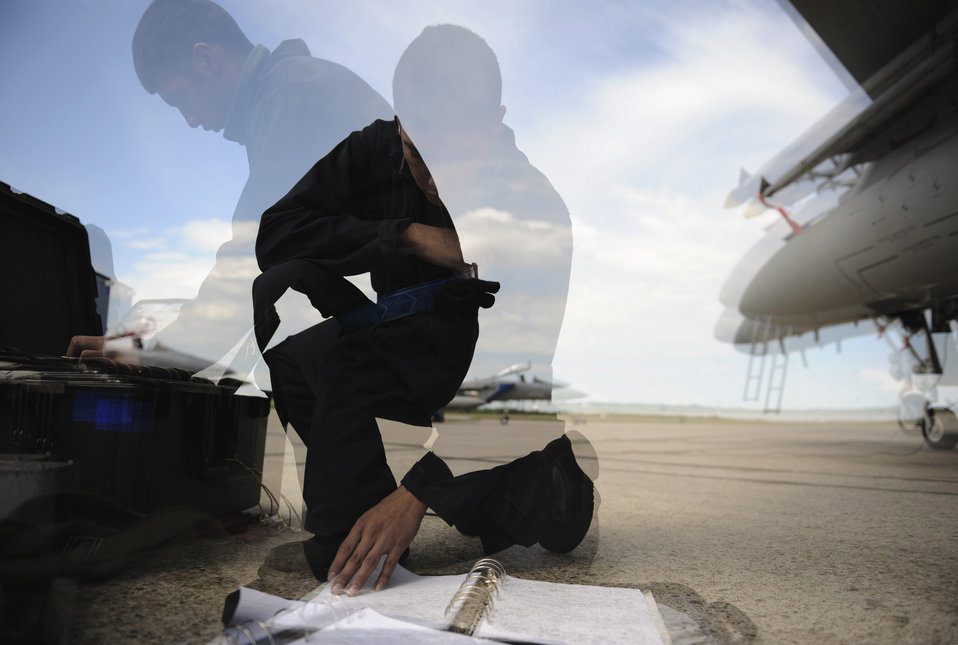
Maple Flag 42

Airman 1st Class Derrick Mojica, an F-15 Strike Eagle crew chief assigned to the 390th Aircraft Maintenance Squadron, Mountain Home Air Force Base, Idaho, prepares to troubleshoot his jet using his post-flight instruction manual during exercise Maple Flag 42 at 4 Wing Cold Lake, Canada, June 10. Maple Flag is a Canadian-sponsored and Air Combat Command supported exercise that provides aircrews simulated air and ground combat training to coalition forces in a NATO environment.